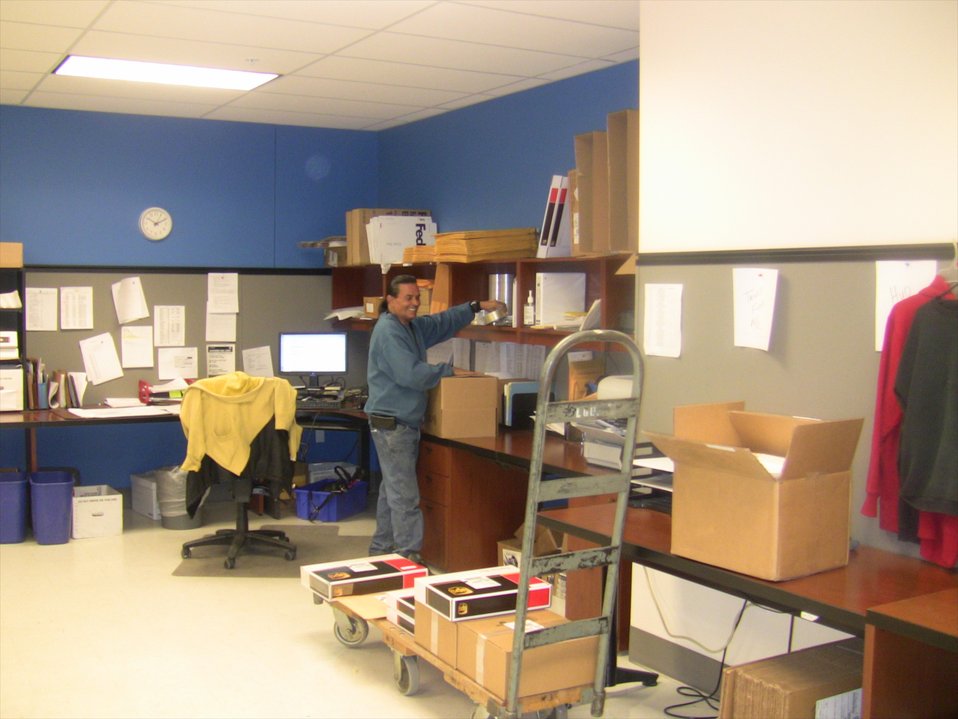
Archivist Kara Ellis observing researchers in the library's research room; Location: Clinton Library, Little Rock, AR